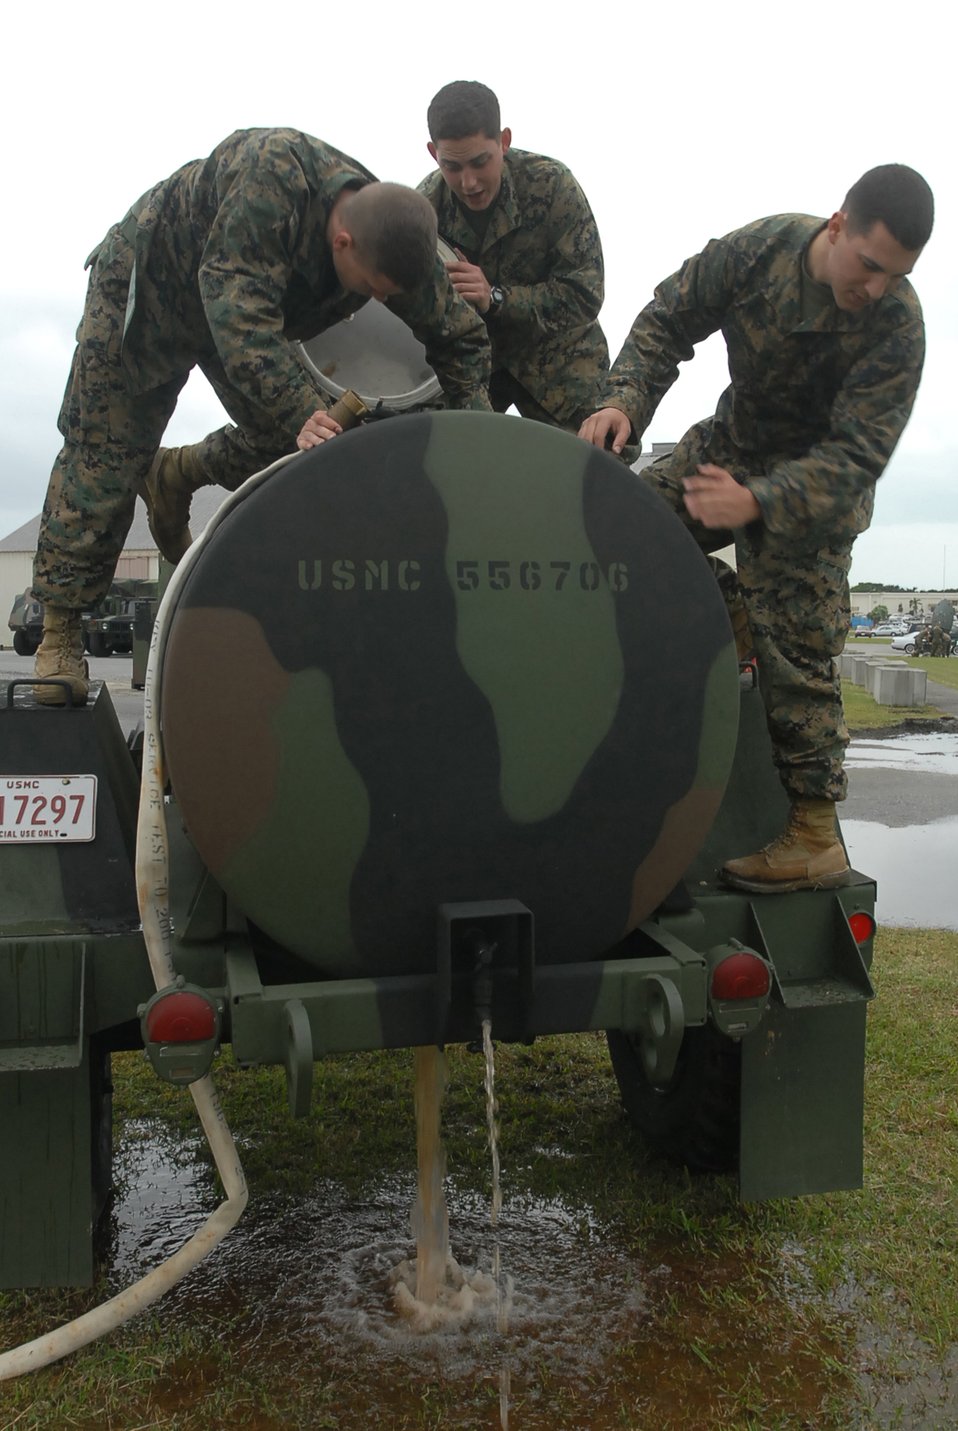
Marines to participate in Kadena readiness exercise

Cpl. Brandon Moreland (left), Lance Cpl. Joel Montez (middle) and Cpl. Evans McClure (right), use a hose to clean out a water bull during the building of a tent city Nov. 29 at Kadena Air Base, Japan. The area will be used as the command post for the Marines during exercise Beverly High 08-02.